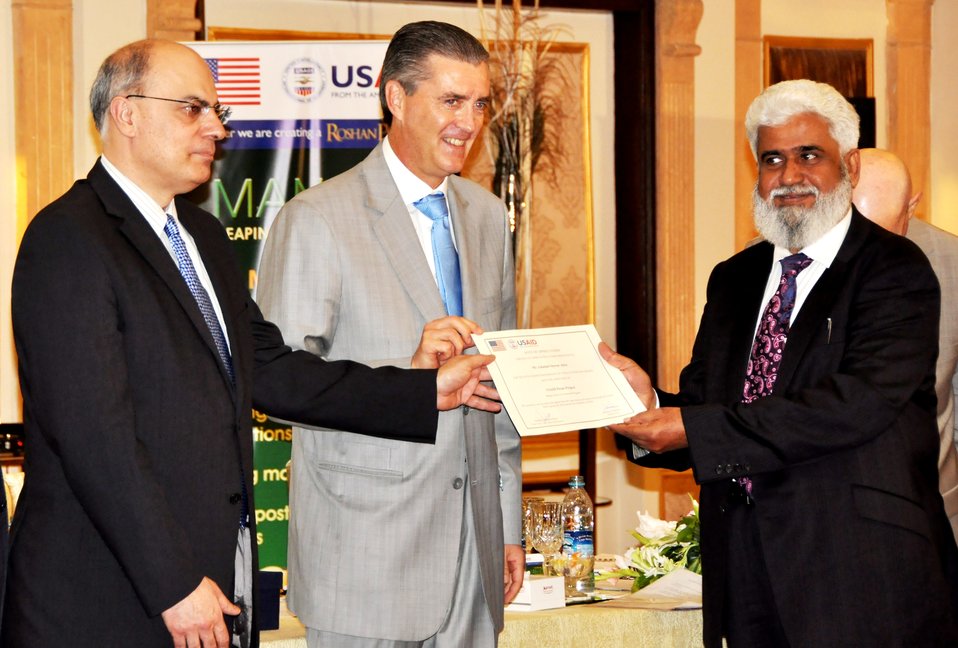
Mango Conference

Ambassador Olson and Commerce Secretary Qasim Niaz while distributing certificates to the project beneficiaries